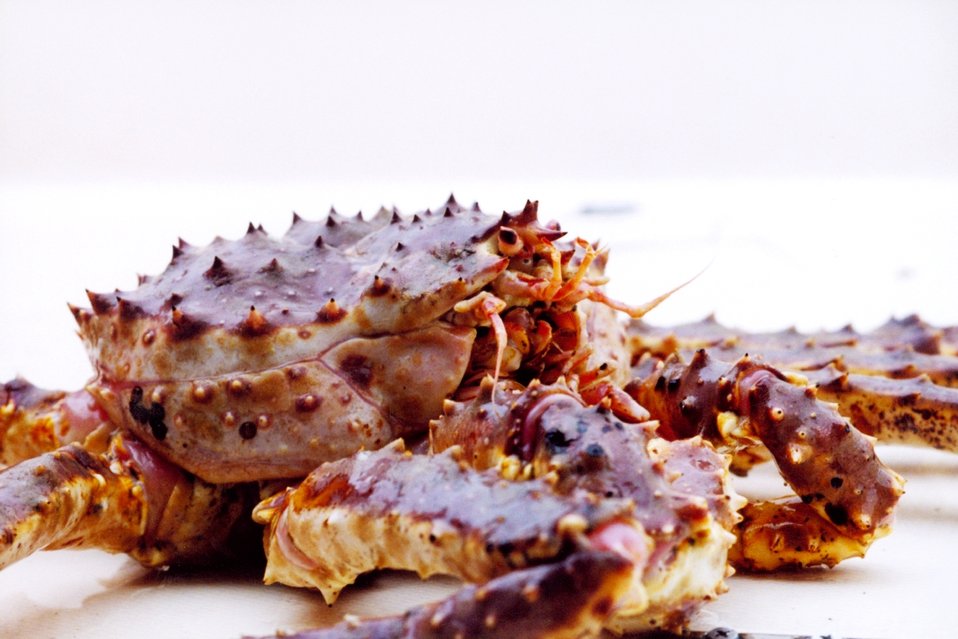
Alaska King Crab